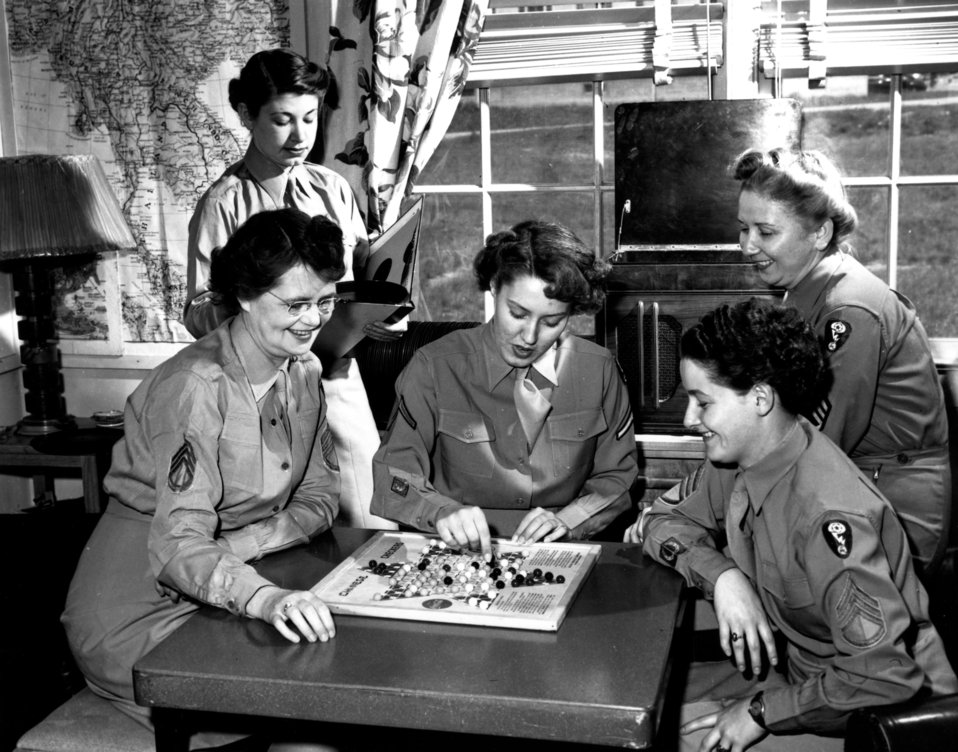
Army Activity at Oak Ridge